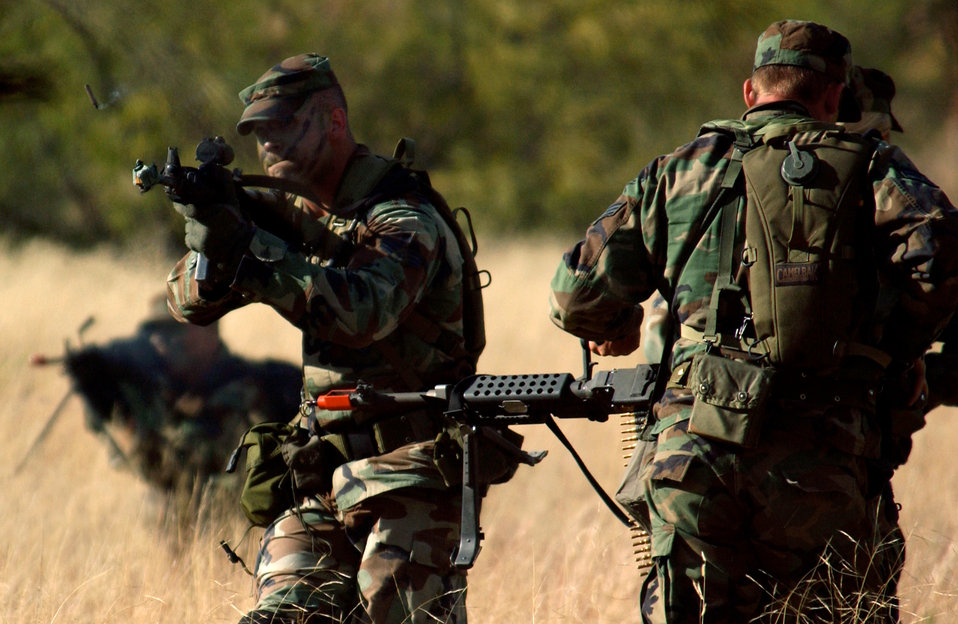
Defender Challenge 2004

FORT HUACHUCA, Ariz. -- Senior Airman Chris Clawson provides cover fire during a tactics training exercise Oct. 13. Members of the U.S. Air Forces in Europe Defender Challenge team are spending three weeks here in preparation for the 2004 Defender Challenge competition. Defender Challenge held at Lackland Air Force Base, Texas, is a security forces competition pitting competitors from major commands against one another over a series of events including marksmanship, tactics and physical fitness. Airman Clawson is assigned to the 39th Security Forces Squadron, Incirlik Air Base, Turkey.